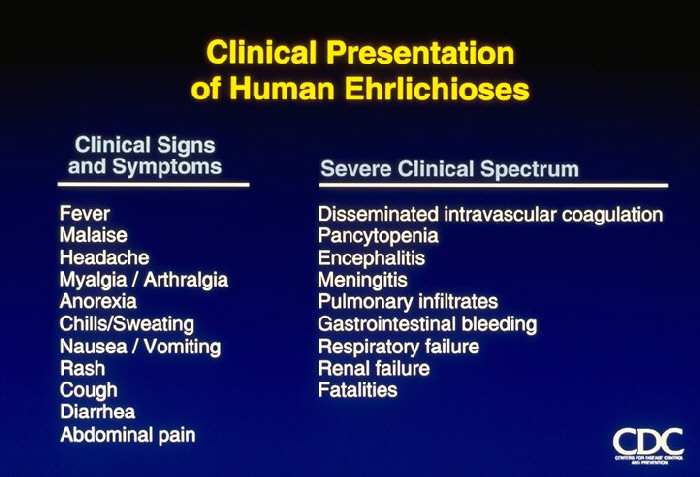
Clinical Presentation of Human Ehrlichioses